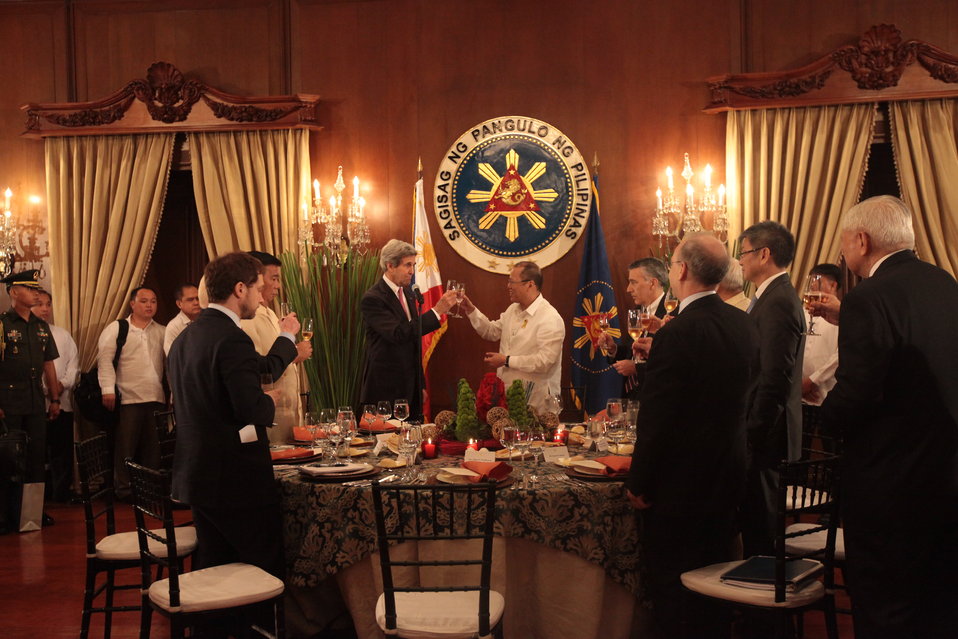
Secretary Kerry Offers a Toast in Honor of Philippine President Aquino

U.S. Secretary of State John F. Kerry offers a toast in honor of Philippine President Benigno Aquino III at Malacañan Palace in Manila, Philippines, on December 17, 2013.